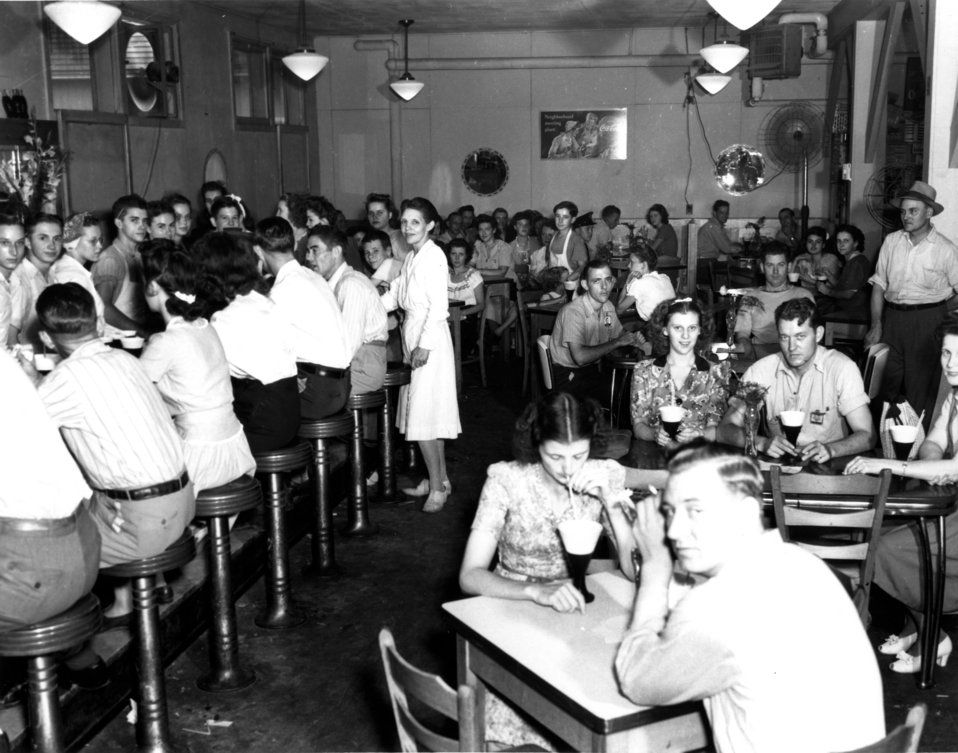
Recreation at Oak Ridge